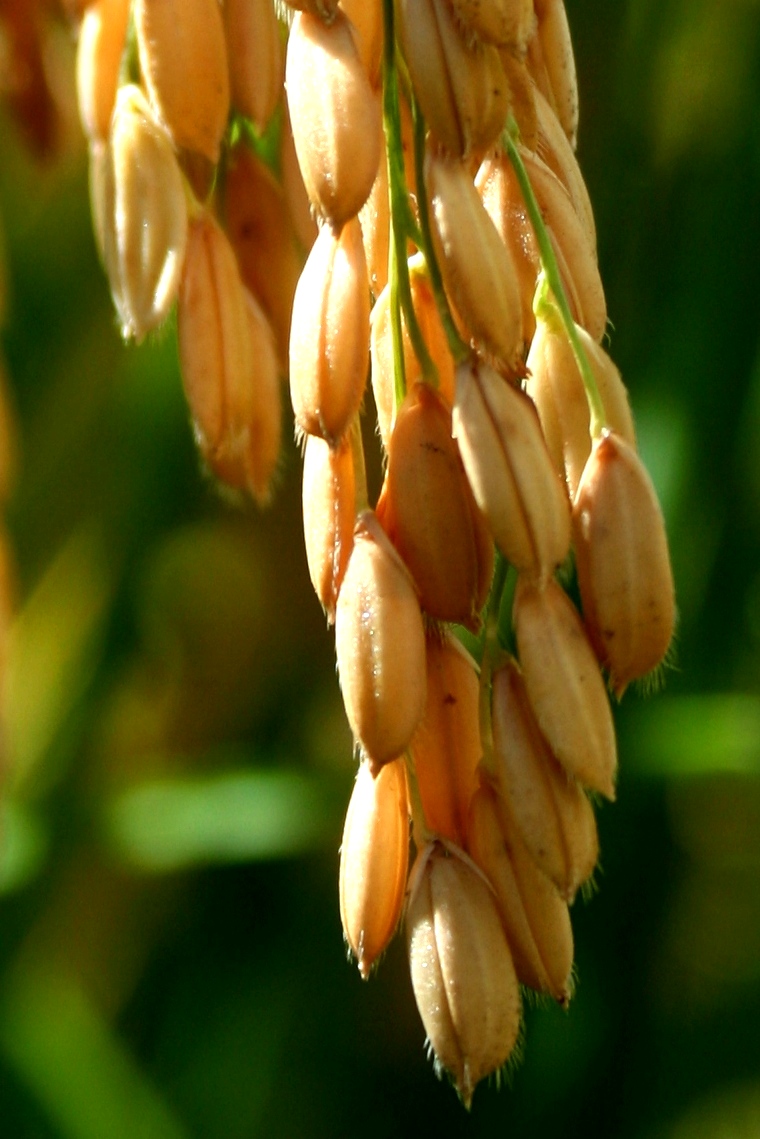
FDA's Rice Tour: Looking for Insights on Arsenic (0826)

FDA Commissioner Margaret A. Hamburg and colleagues visited research facilities and rice farms in California on Sept. 4-5, 2013 in an effort to gain a greater understanding of the presence of arsenic in rice. Shown is a close-up in the rice field at the Lyle Job farm in Richvale, Calif. For more information, read the FDA Voice blog:

• On Farms and in Labs, FDA and Partners Are Working to Get Answers on Arsenic in Rice